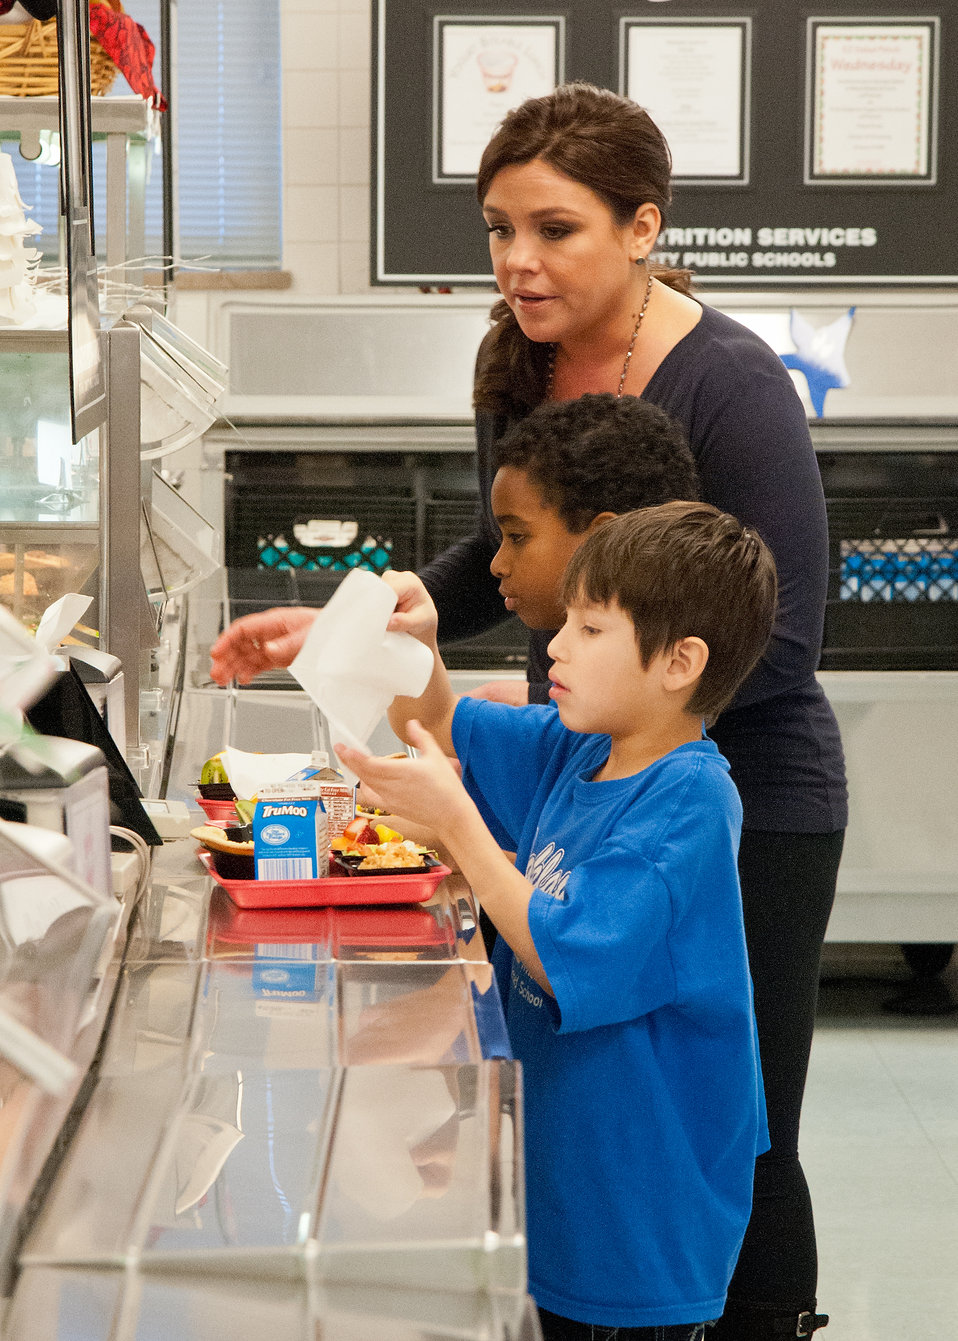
Celebrity cook Rachael Ray and school food service employees served one of her recipes of ground turkey tacos, Mexican brown rice and black bean and corn salad accompanied by mixed fruit at Parklawn Elementary School in Alexandria, Virginia, on Wednesday, January 25, 2012. Rachel Ray, First Lady Michelle Obama and Agriculture Secretary Tom Vilsack visited the school to speak with faculty and parents about the United States Department of Agriculture’s new and improved nutrition standards for school lunches.